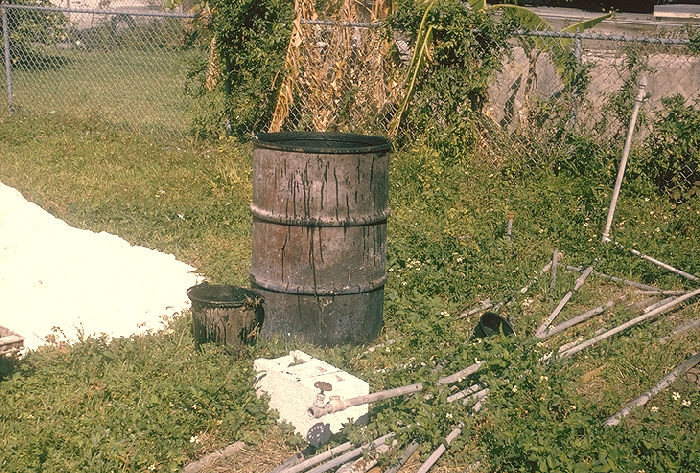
Tar barrel, mosquito breeding site, San Antonio, Texas.